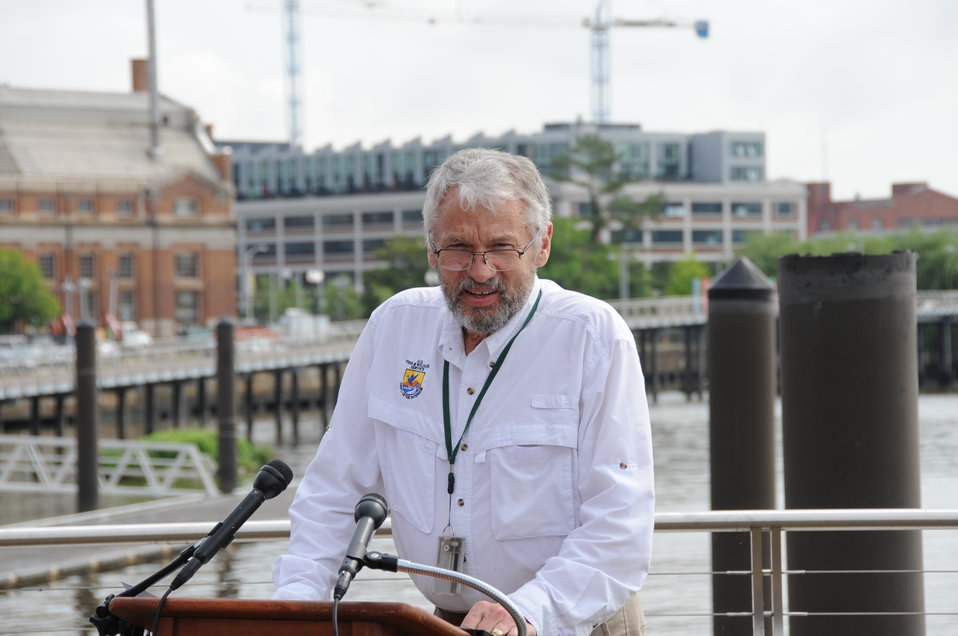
2013 National Fishing and Boating Week

Rowan Gould, Deputy
Director of Operations- USFWS opened ceremony to the 2013 National Fishing and Boating Week in Washington D.C.